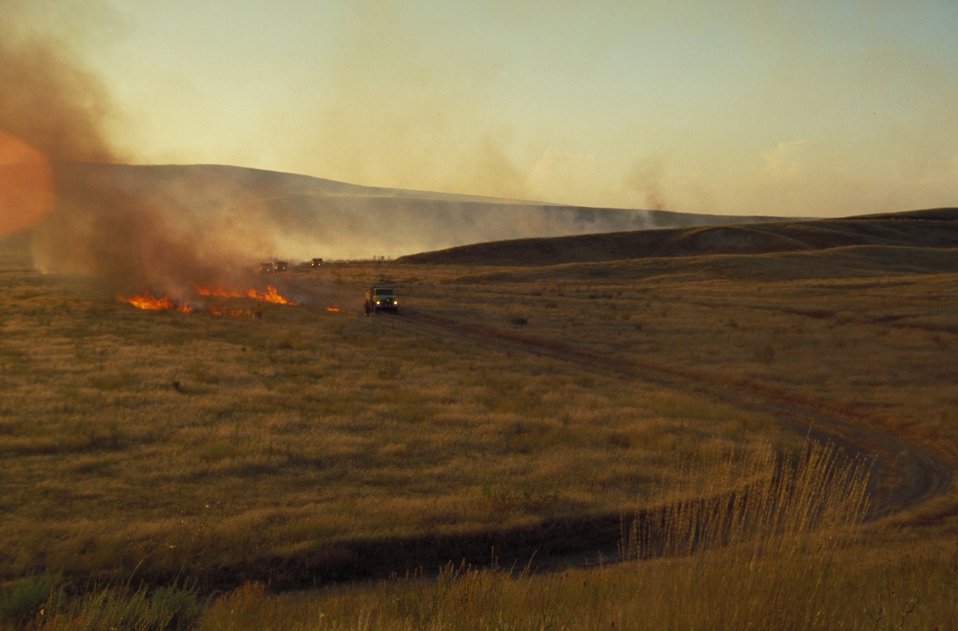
Prescribed burn Fire Season 2000 Lower Snake River District LSRD